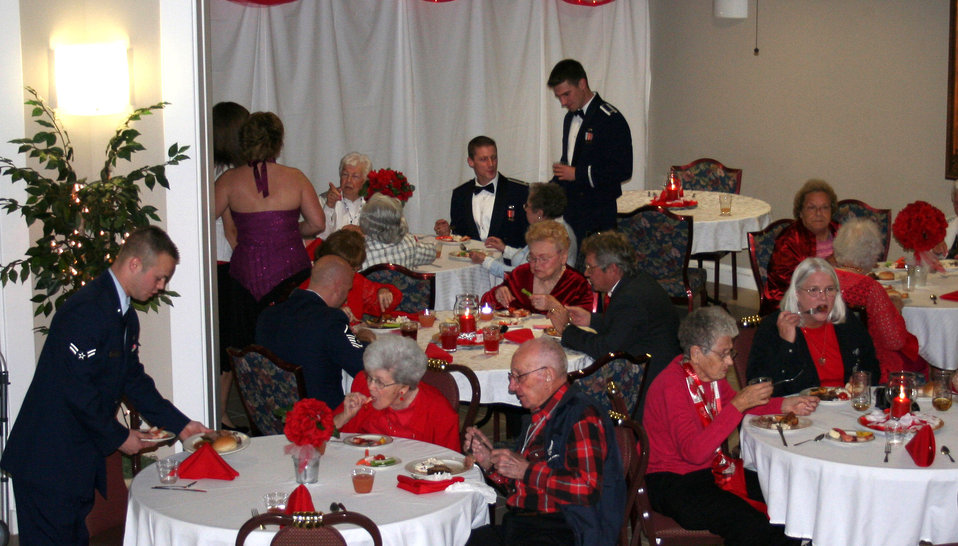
Airmen bring romance and roses to Air Force Enlisted Village

More than thirty Airmen from nearby Hurlburt Field and Eglin Air Force Base joined residents at the Air Force Enlisted Village's Hawthorn House in Shalimar, Fla., Feb. 9 for their Valentine's Day Ball. Hawthorn House is the AFEV's assisted living residence. The ball included dinner and a dance.